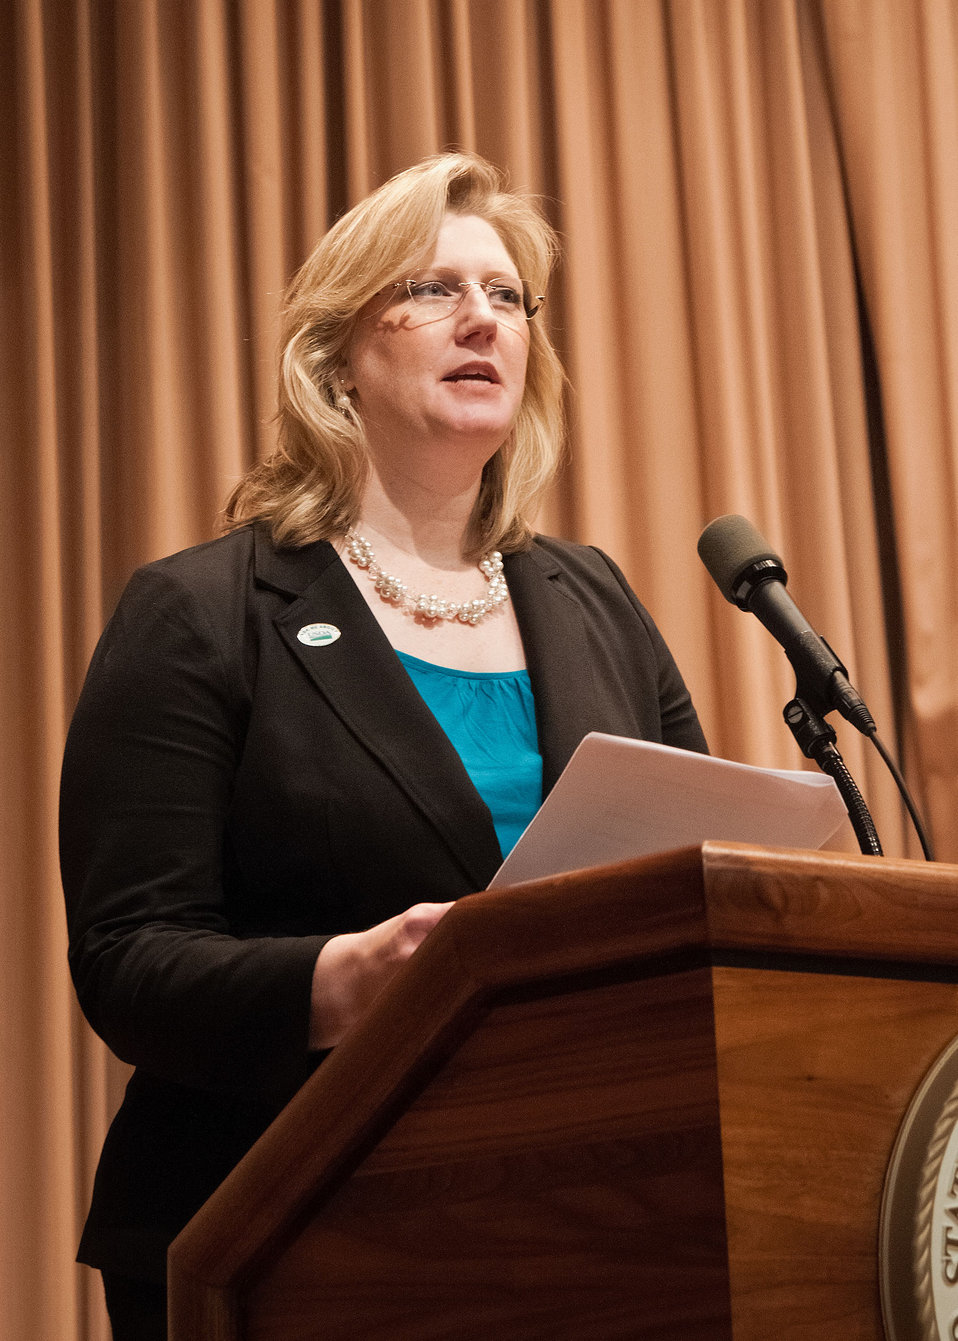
U.S. Department of Agriculture (USDA) Departmental Management Disability Employment Manager Alison Levy is the Mistress of Ceremonies at USDA's 2012 National Disability Employment Awareness Month celebration in the Jefferson Auditorium at USDA in Washington, D.C. on Wednesday, Oct. 17, 2012. The theme for the event was, “A Strong Workforce is an Inclusive Workforce: What Can You Do?